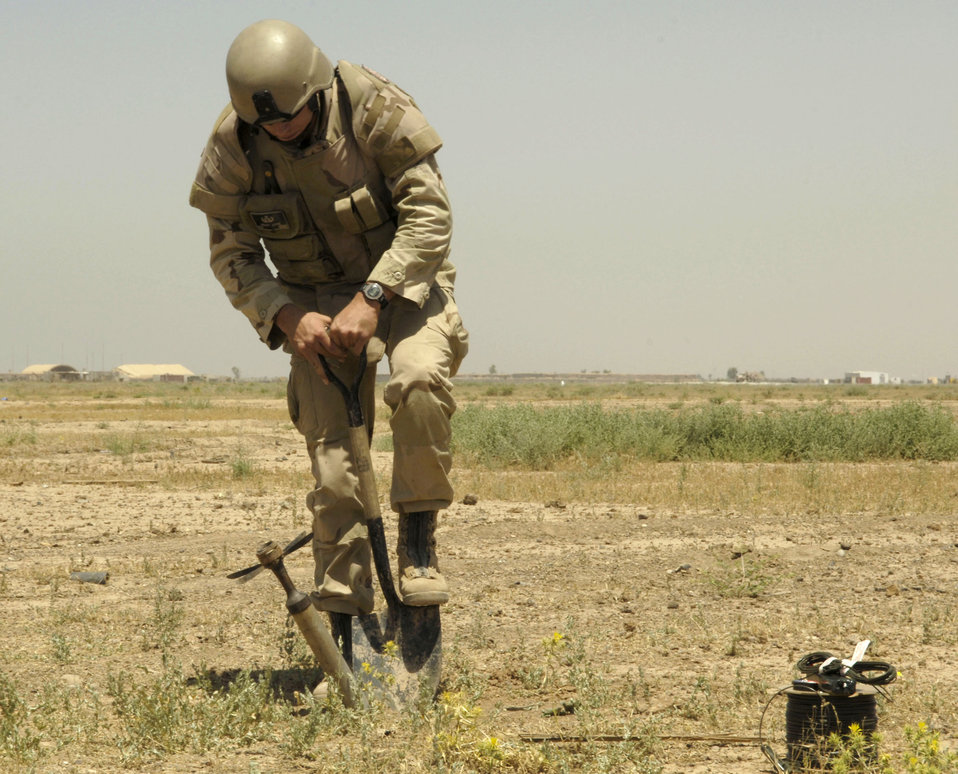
Controlled detonation

Senior Airman Scott Love digs near a 57mm rocket to loosen the dirt, enabling him to pull the rocket out of the ground at Balad Air Base, Iraq, on Monday, May 22, 2006. Airman Love is deployed to the 332nd Expeditionary Civil Engineer Squadron from Beale Air Force Base, Calif.